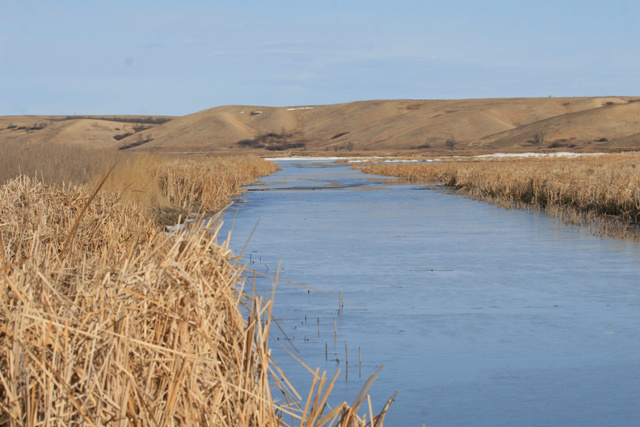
View of Des Lacs Refuge from the Southern Boundary